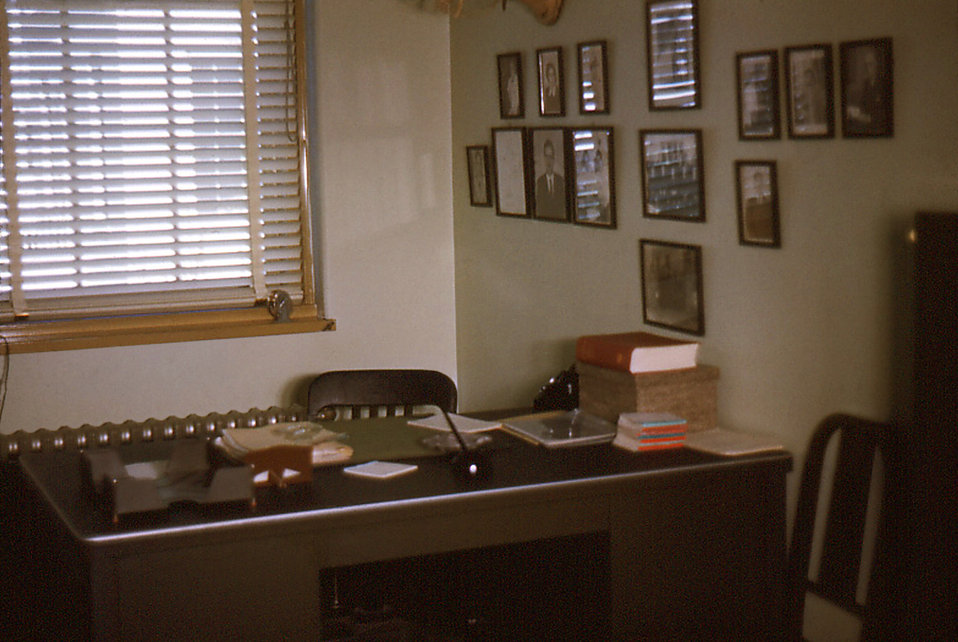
A Carville, Louisiana Leprosarium doctor's office was depicted in this historic image, where pictures on the walls could be seen representing past and present members of the Medical Officer staff.The National Hansen's Disease Museum's (NHDM) mission is to collect, preserve and interpret the medical and cultural artifacts of the Carville Historic District. In addition, we want to promote the understanding, identification, and treatment of Hansen's Disease (leprosy). We fulfill this mission by creating and maintaining museum displays, traveling exhibits, publications and a website in order to educate and inform the public on all levels.